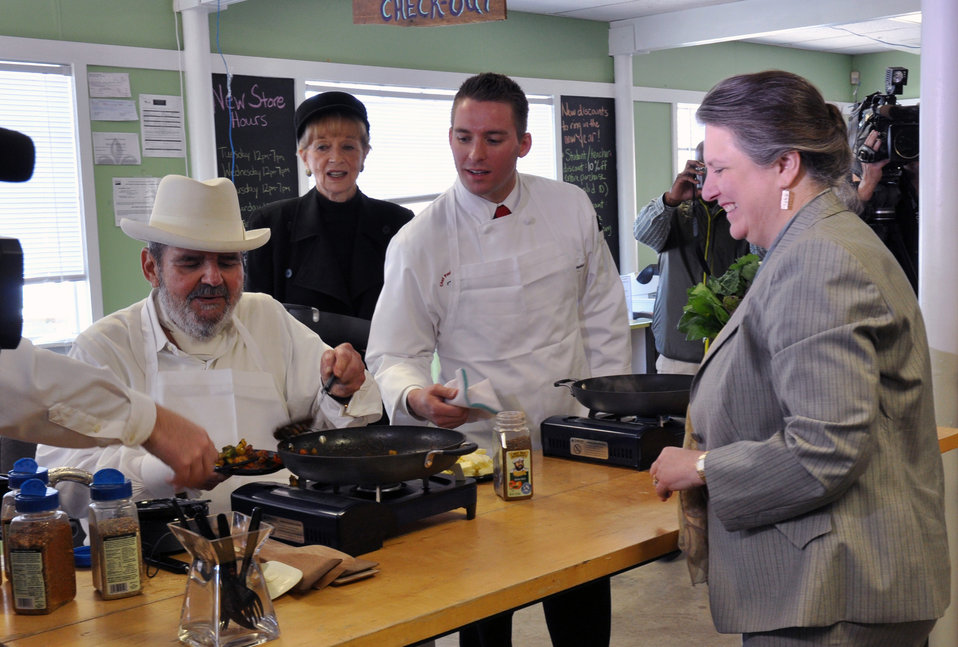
Agriculture Deputy Secretary Kathleen Merrigan and American celebrity Chef Paul Prudhomme visit Hollygrove Farm in New Orleans, LA on Tuesday, Feb. 26, 2013. Deputy Secretary Merrigan and Chef Prudhomme prepare a vegetable plate using local produce to share with community farmers to highlight the strength and resiliency of American agriculture and economic opportunity associated with local and regional food production. Deputy Secretary Merrigan announced a new U.S. Department of Agriculture (USDA) report that highlights new economic opportunities for farmers and ranchers by utilizing food hubs to aggregate their product and USDA’s commitment to increasing economic opportunities for local farmers and ranchers while expanding access to fresh, local foods.